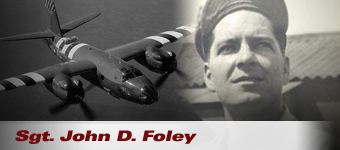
Sgt. John D. Foley was an